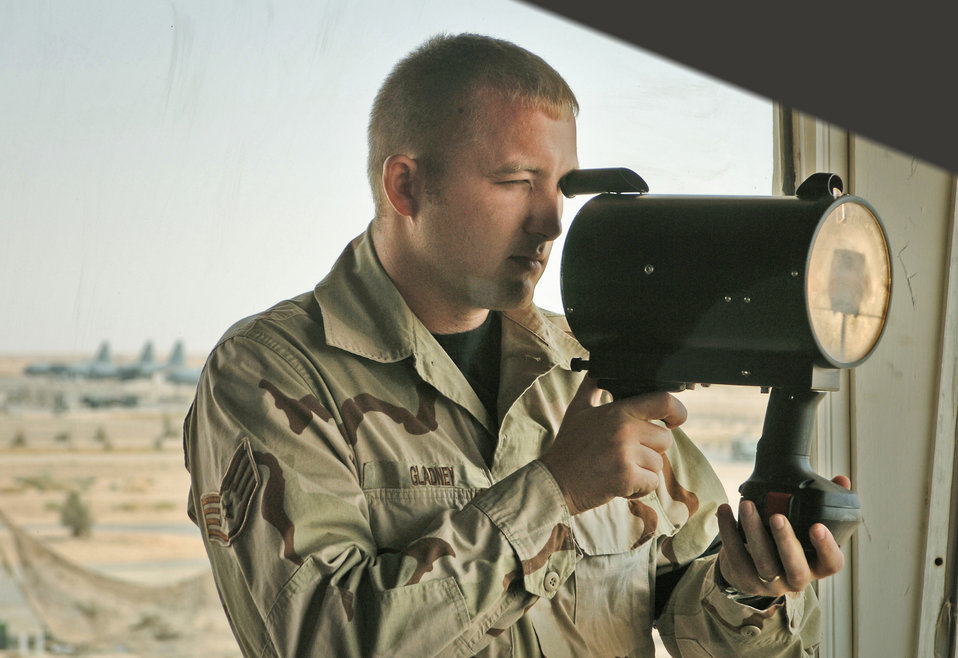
Air traffic controllers perform dual mission, put fighters on target

ALI BASE, Iraq -- Staff Sgt. John Gladney tests a light gun used to control aircraft if radio communication fails. Sergeant Gladney is an air traffic tower watch supervisor with the 407th Expeditionary Operations Support Squadron and is deployed from Tyndall Air Force Base, Fla.